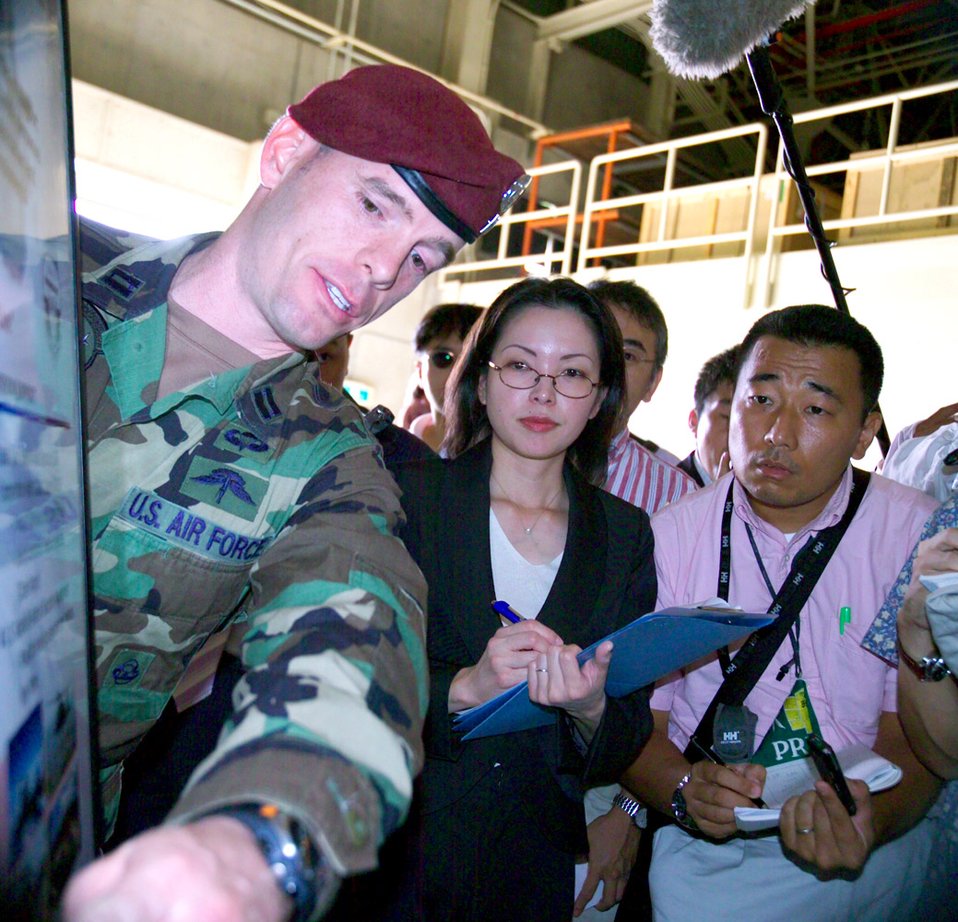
Proficiency paradrop

A member of the 31st Rescue Squadron explains the capabilities of pararescuemen to members of the Japanese media before a proficiency paradrop Oct. 19 at Kadena Air Base, Japan. More than 20 media members attended the briefing about the airborne operation and observed the drop.